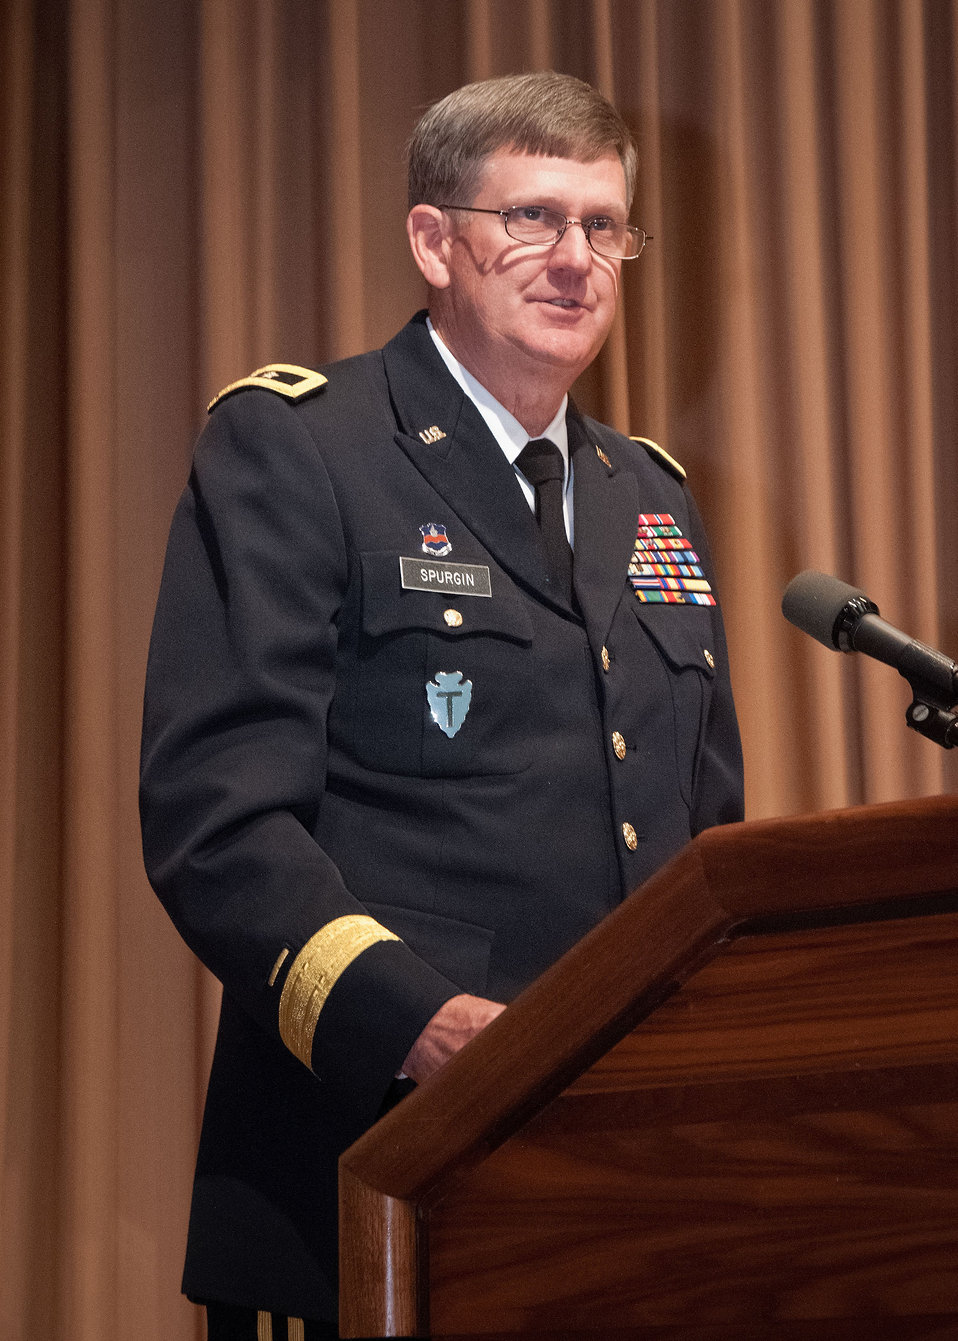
Master of Ceremony Major General Eddy M. Spurgin (Ret.) MG(R) opens the U.S. Department of Agriculture Veterans Day Observance: Honoring All Who Served, in Washington, D.C. on Wednesday, Nov. 7, 2012. Spurgin currently serves as the District Conservationist, Natural Resources Conservation Service in Big Spring, Texas. He served over 30 years in the Texas Army National Guard and commanded from the company level to Division Commander. He recently commanded the 36th Infantry Division, Texas Army National Guard from April 2009 to January 2012 and served as the Commanding General, United States Division-South in Basra, Iraq from 2 Jan 2011 to 7 Sept 2011, during OPERATION NEW DAWN.